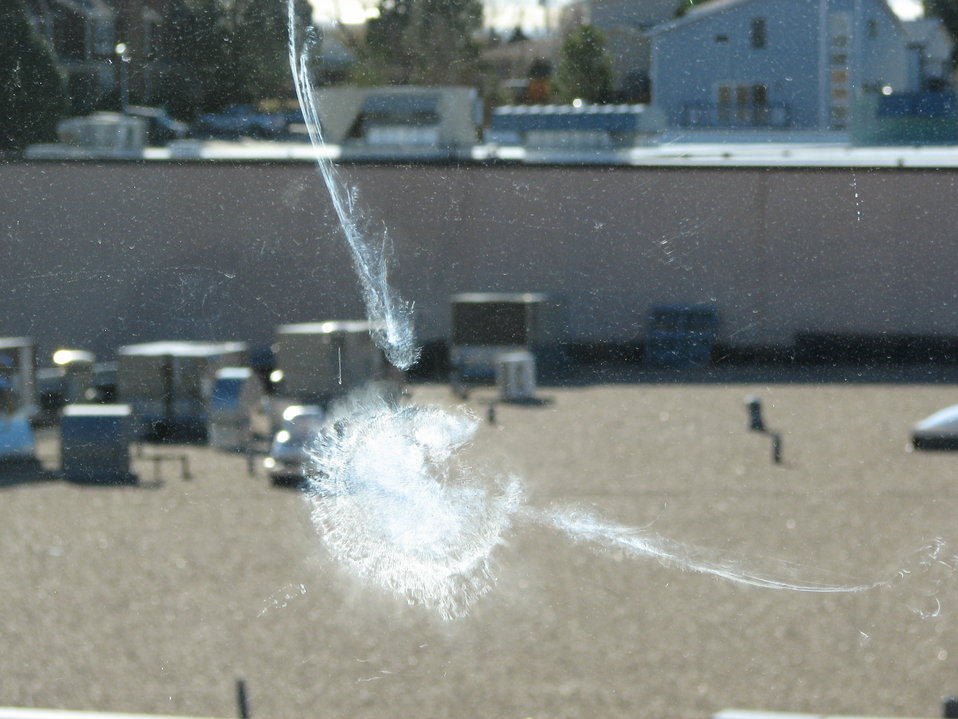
Bird Collision with Window

Imprint of a bird (probably a pigeon) in building window.

Credit: Pedro 'Pete' Ramirez, Jr. / USFWS